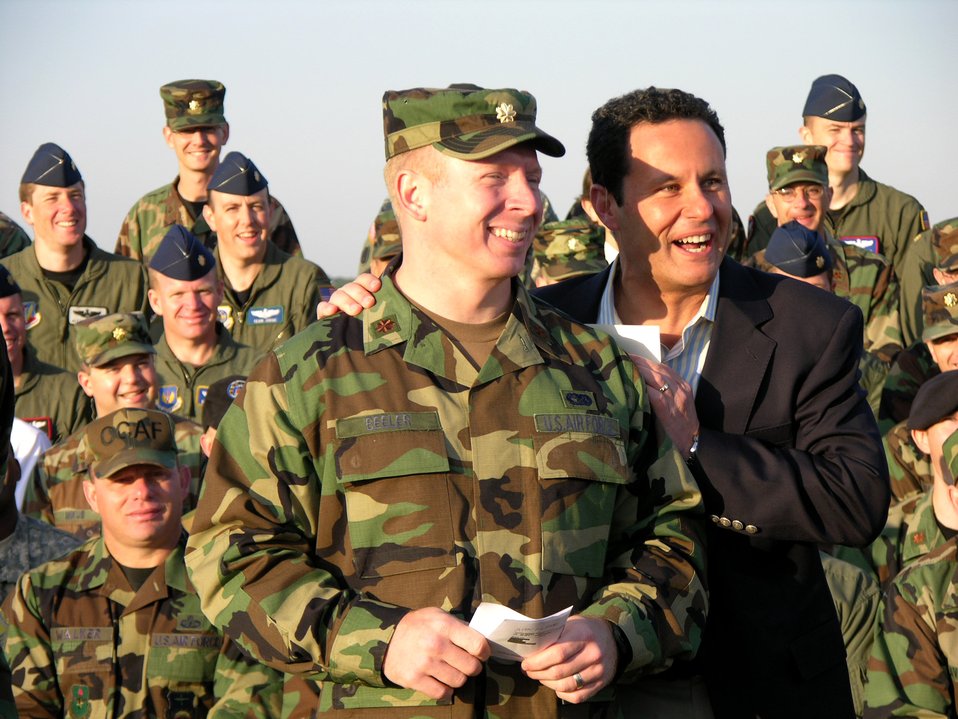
Fox & Friends

Maj. Vic Beeler enjoys a light moment with Fox & Friends co-anchor Brian Kilmeade at Maxwell Air Force Base, Ala., May 18. Major Beeler, along with other Air Command and Staff College officers and enlisted Airmen at Air University, helped Mr. Kilmeade read the morning's sports stories during a live broadcast on the Fox network cable morning show. Mr. Kilmeade was broadcasting from Maxwell as part of the Fox Network's Salute to the Military at various Air Force installations.